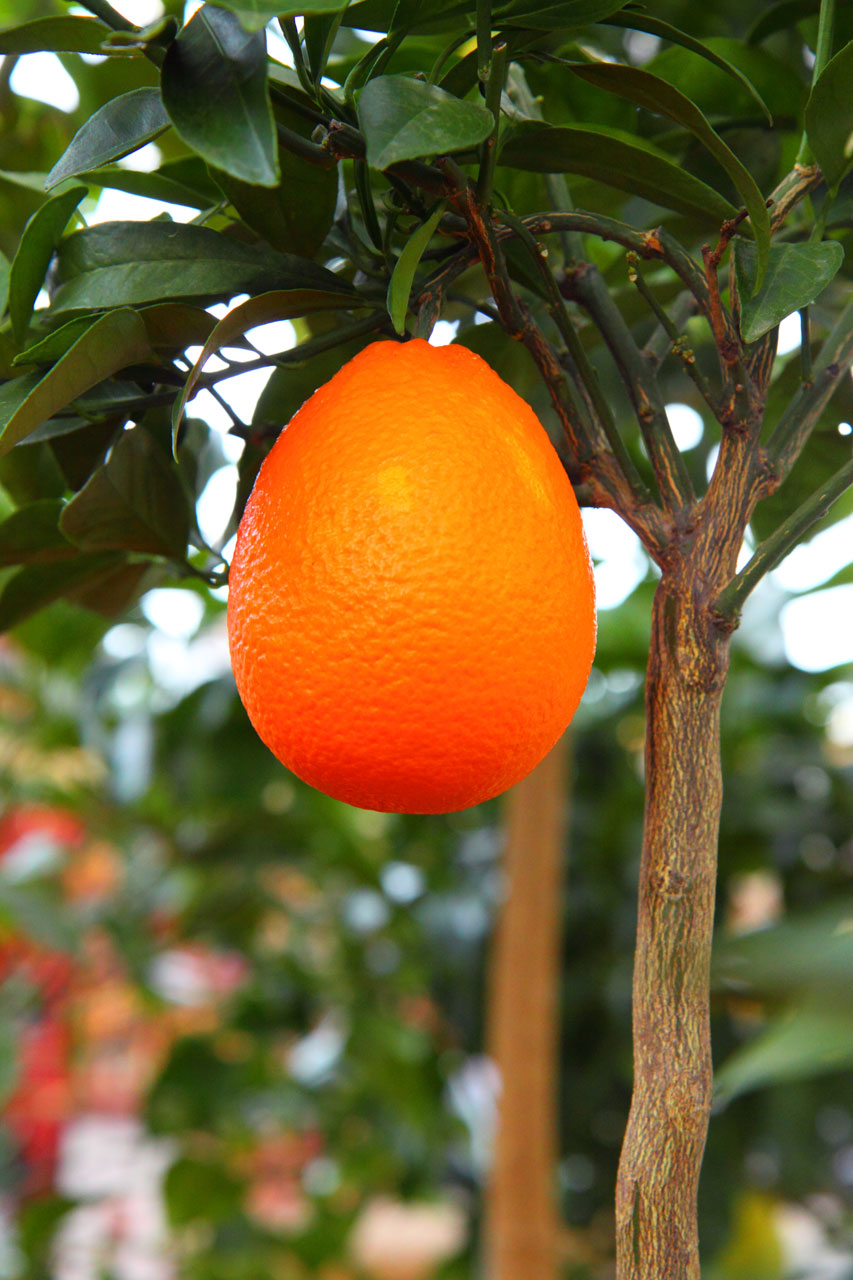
Growing orange on tree.